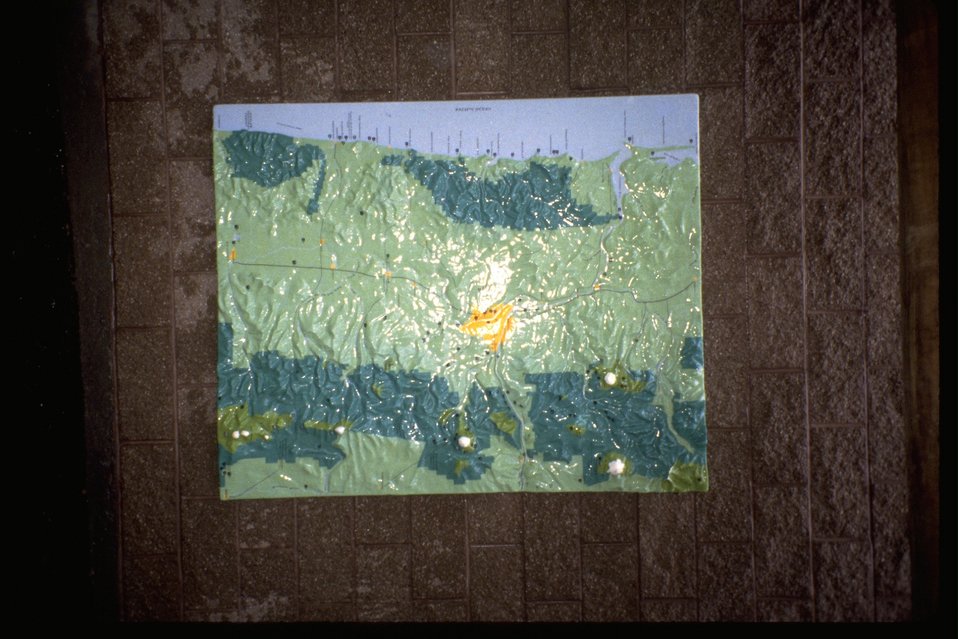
Display of interagency public lands tactile model at the Oregon Zoo.